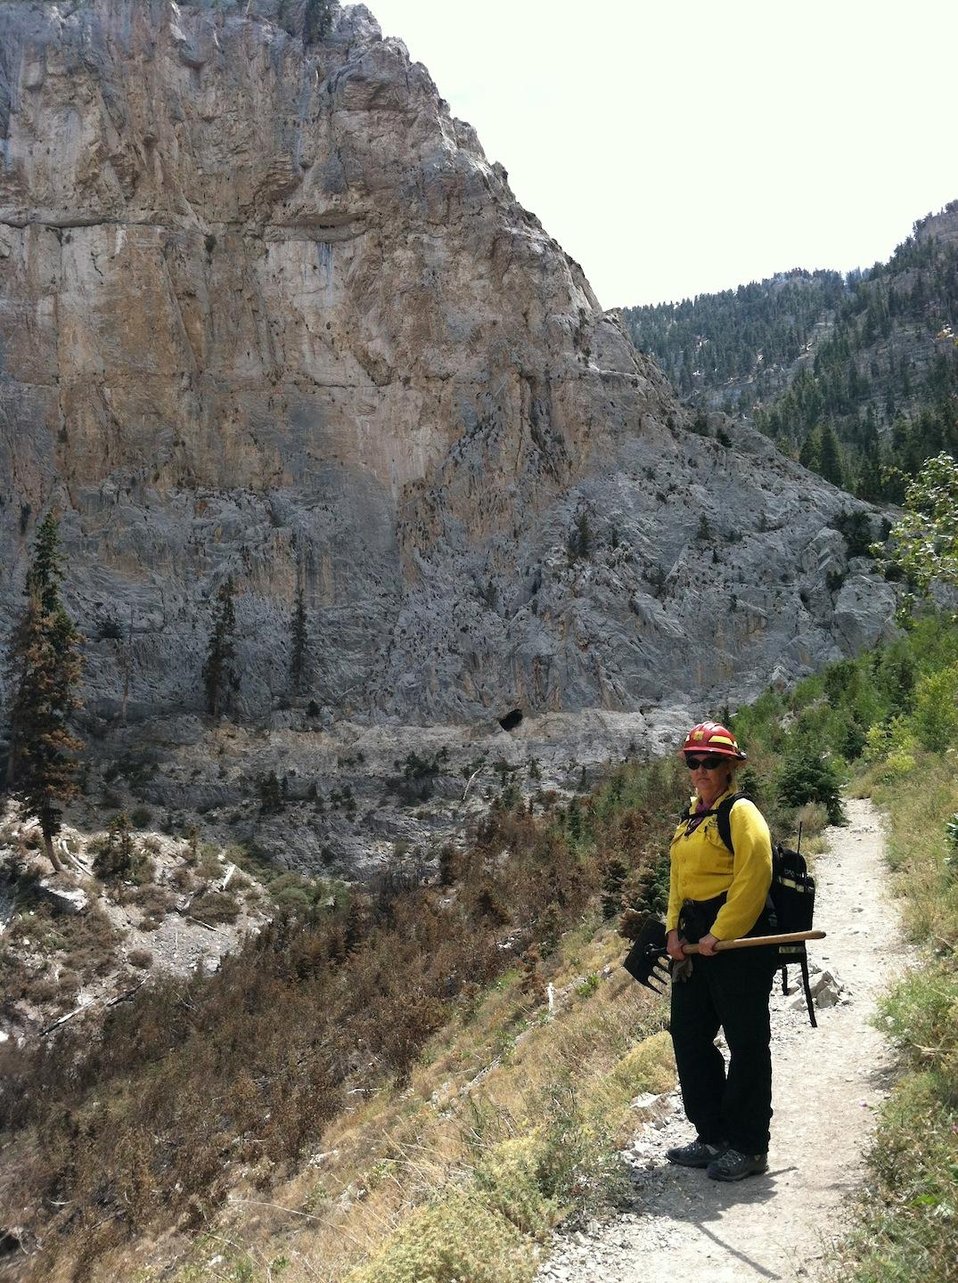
Angeles National Forest, Arcadia, CA firefighter Herman Garcia inspects the Lovell Canyon Trail at the Carpenter Fire for hot spots. The Carpenter Fire in the Toiyabe National Forest near Humboldt, NV was caused by a lightning strike on Jul. 1, 2013. The fire has consumed nearly 27,881acres and is presently 95% contained.